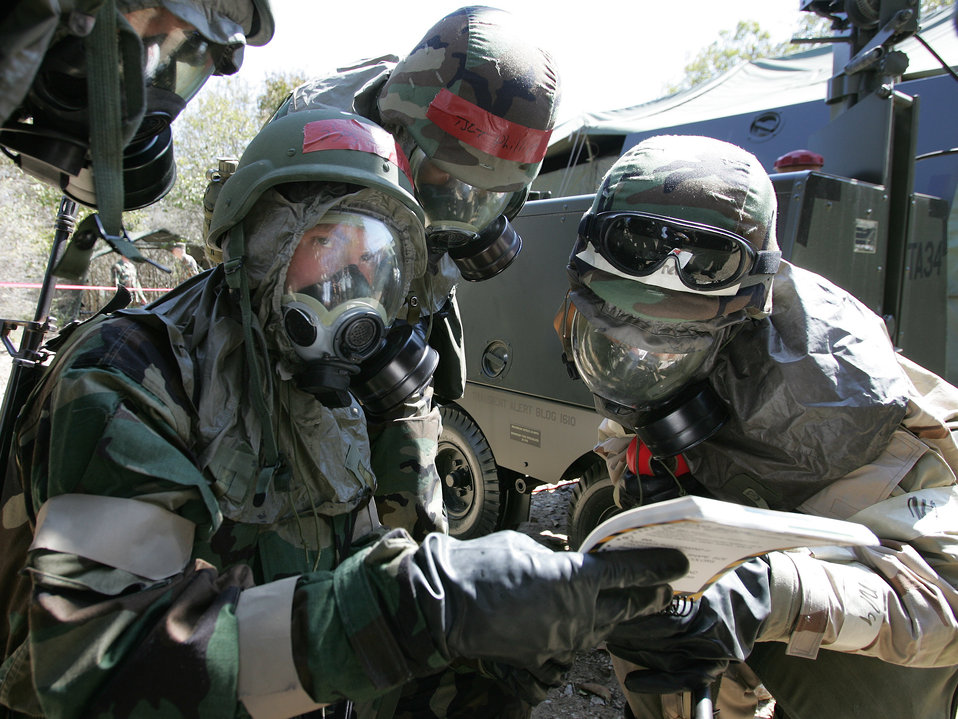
Preparing for contingency

Staff Sgt. Joseph Sawyer, Tech. Sgt. Jeff Phillip and Staff Sgt. James Nephew spot an unexploded ordnance and check their Airman's Manual to identify it during a contingency exercise at Lackland Air Force Base, Texas, Tuesday, Feb. 28, 2006. Sergeants Sawyer and Phillip are with the 37th Contracting Squadron and Sergeant Nephew is with the 37th Security Forces Squadron.